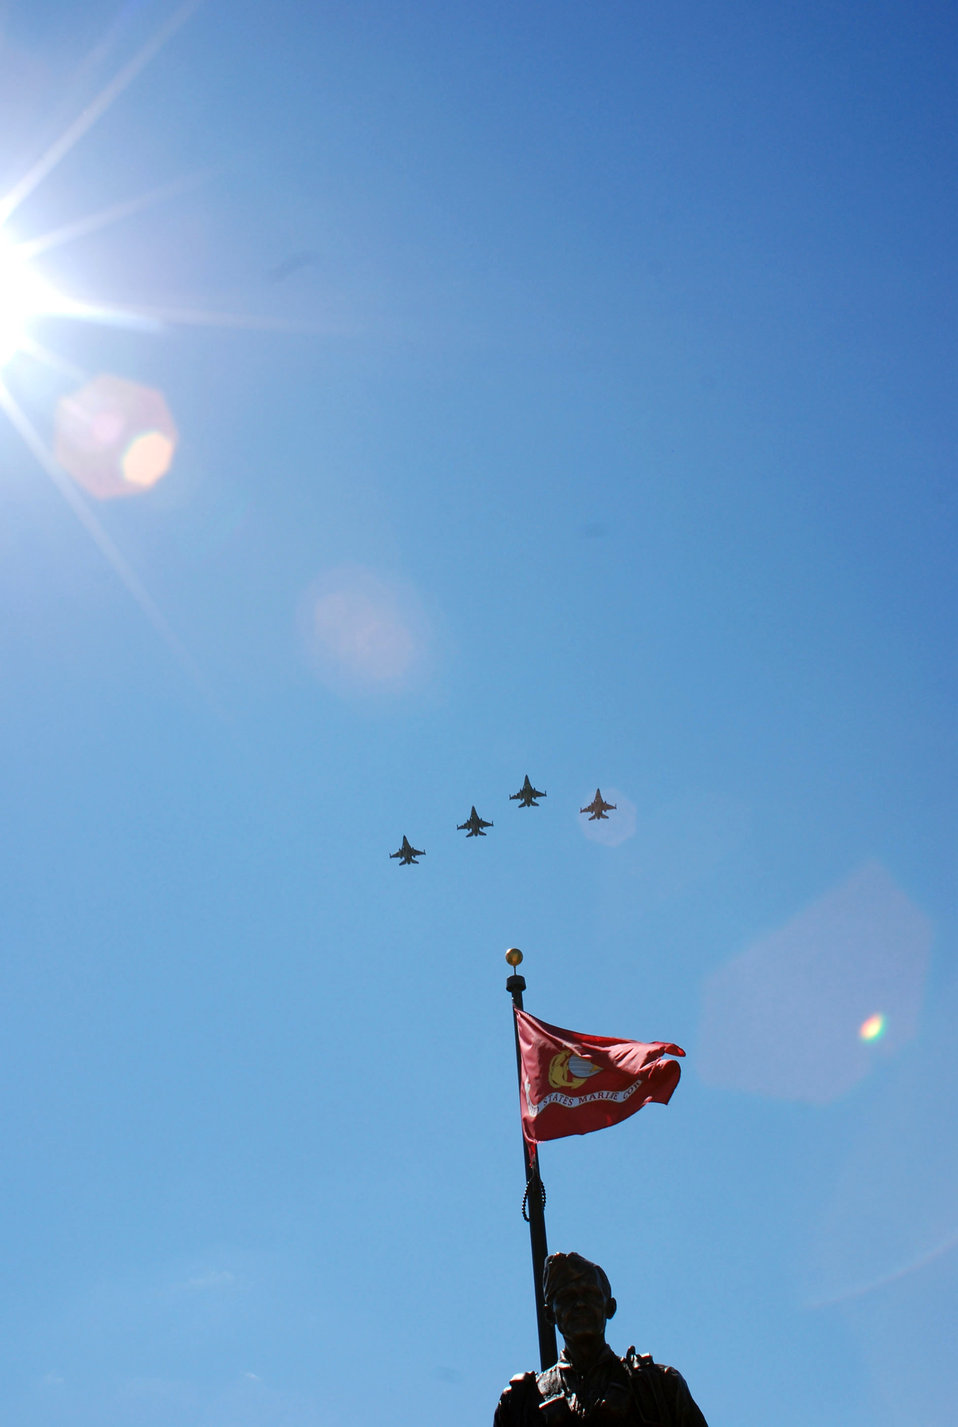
Illinois town dedicates park to local war hero

Four F-16 Fighting Falcons fly over a bronze statue of retired Col. James H. Kasler during a Sept. 15 veteran's memorial dedication in Momence, Ill. The fighter aircraft are from Air Force Reserve Command's 301st Fighter Wing at Naval Air Station Joint Reserve Base Fort Worth from Carswell Field, Texas.